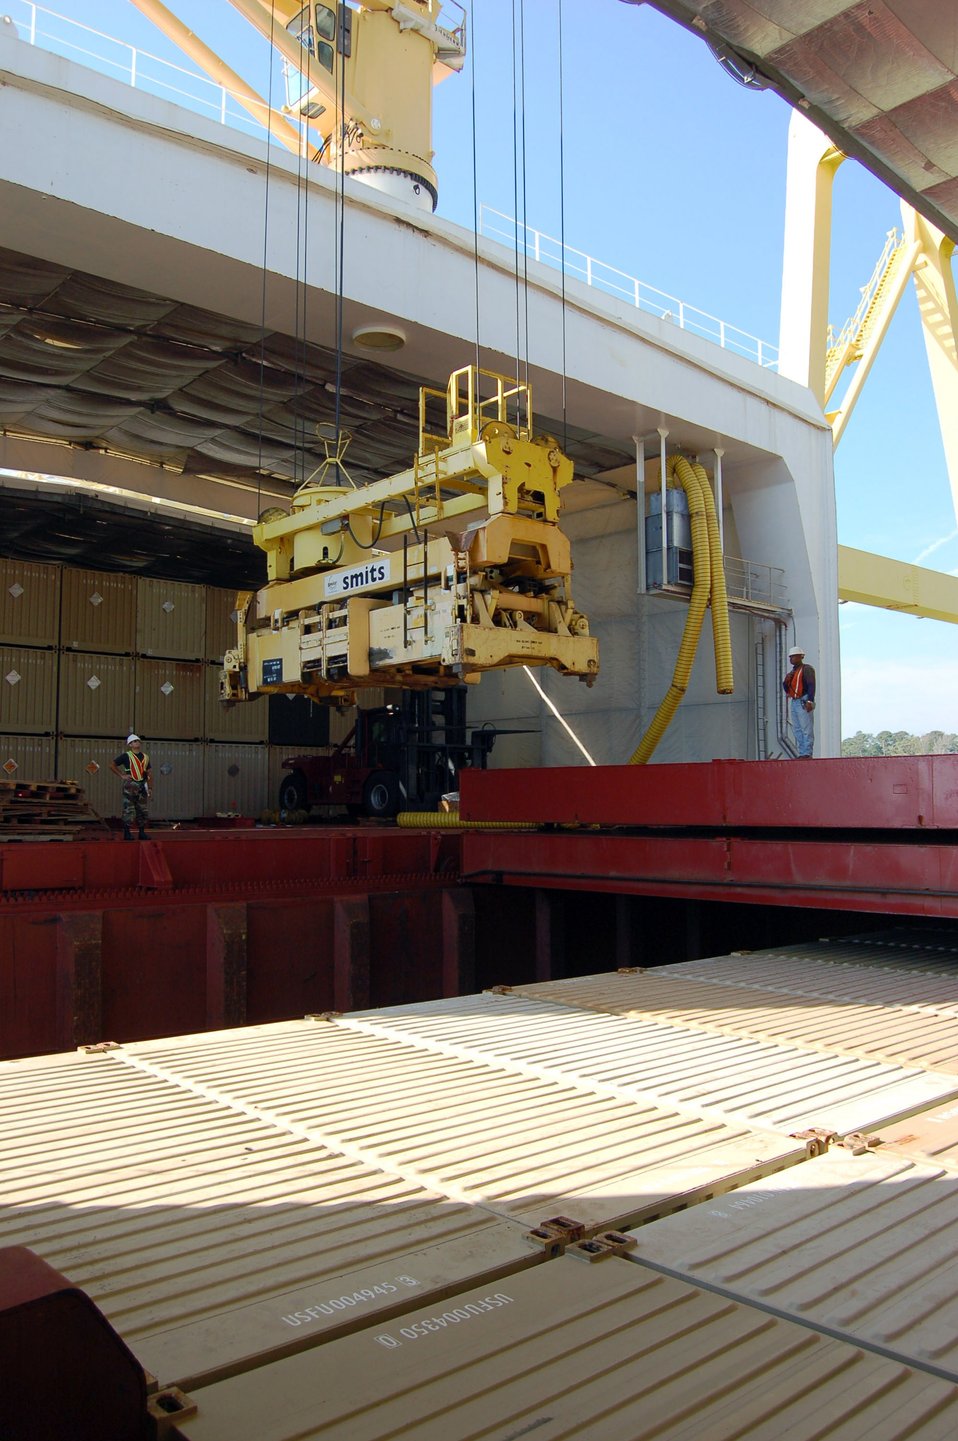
Air Force armada all about the ammo

Staff Sgt. Juan Guadalupe watches as a crane prepares to unload an empty container from one of the cargo holds on the MV Capt. Steven L. Bennett, a ship belonging to the Air Force's Afloat Pre-positioned Fleet, Oct. 16 at the Military Ocean Terminal-Sunny Point, N.C. The APF ships are loaded with thousands of tons of munitions and then sail to a predetermined point in the Pacific or Indian Ocean where they wait to offload their cargo when needed. Sergeant Guadalupe is an APF team member from Tyndall Air Force Base, Fla.